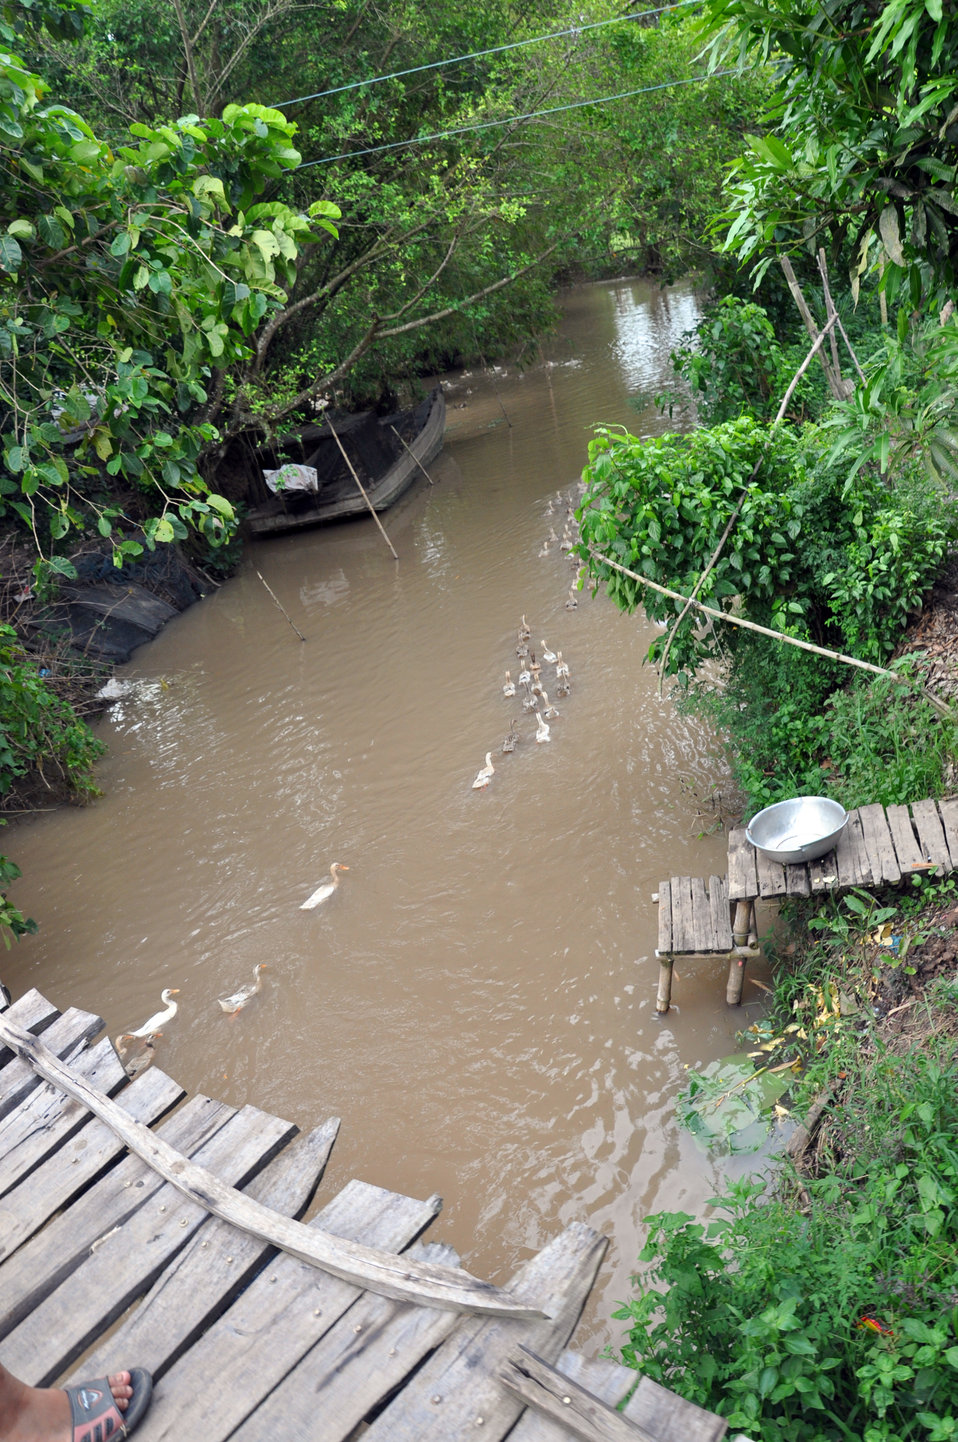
Ducks paddle downstream in Vietnam's Mekong Delta

USAID provides training and support to poultry farmers to stem the spread of avian influenza.